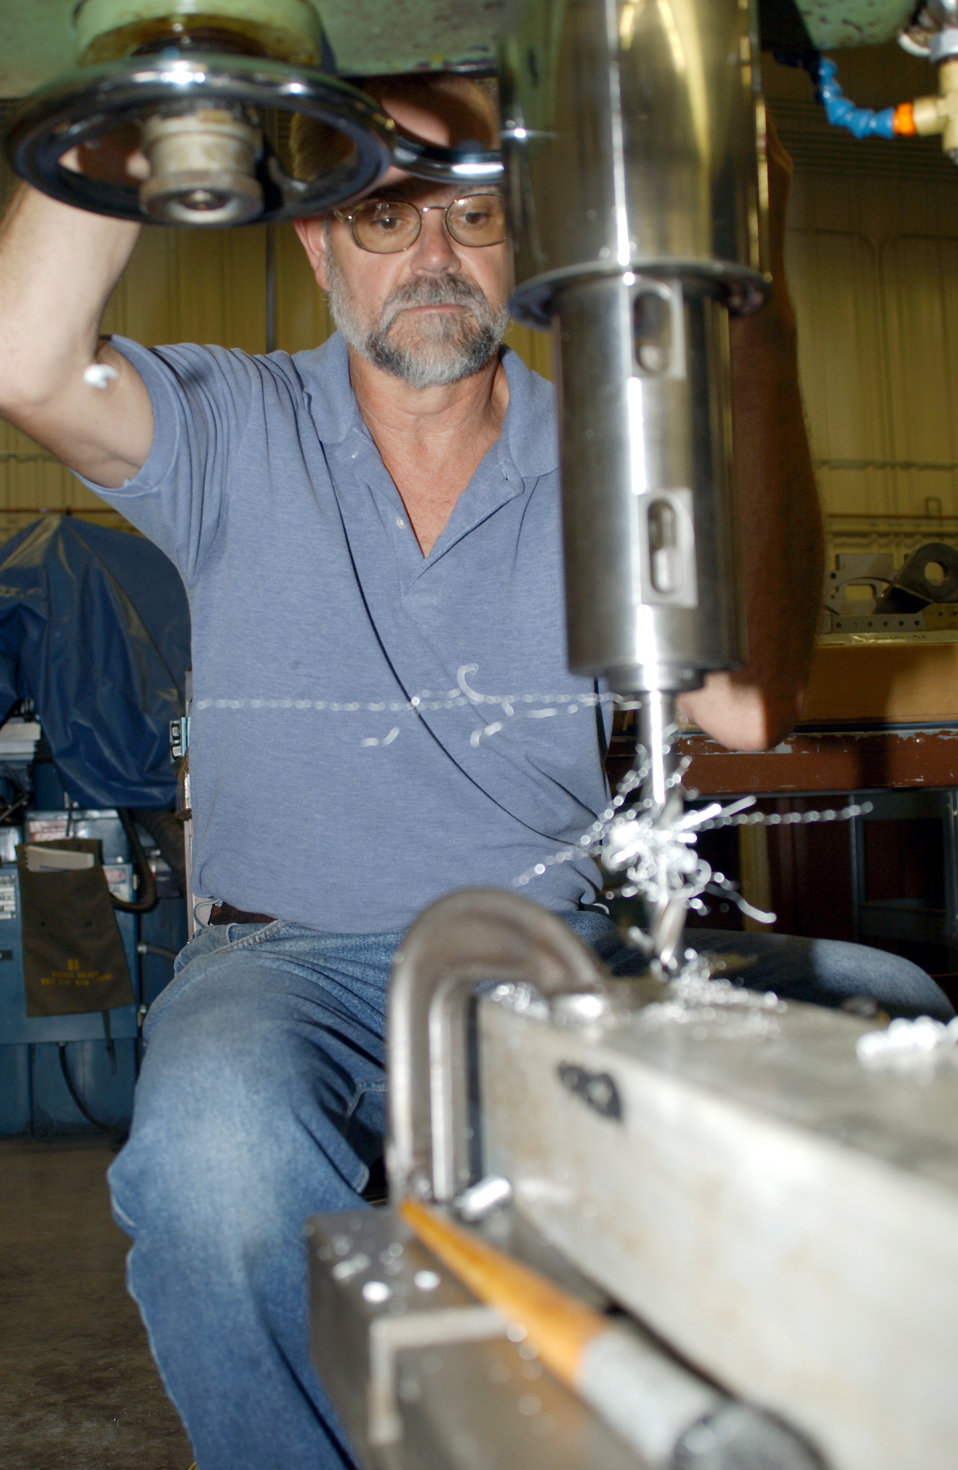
Thunderbolt upgrades

DAVIS-MONTHAN AIR FORCE BASE, Ariz. -- Tommy Rollins creates a special tool for milling A-10 Thunderbolt II wing mounts to exact specifications. He is an aircraft structural mechanic and machinist with the Aerospace Maintenance and Regeneration Center here.